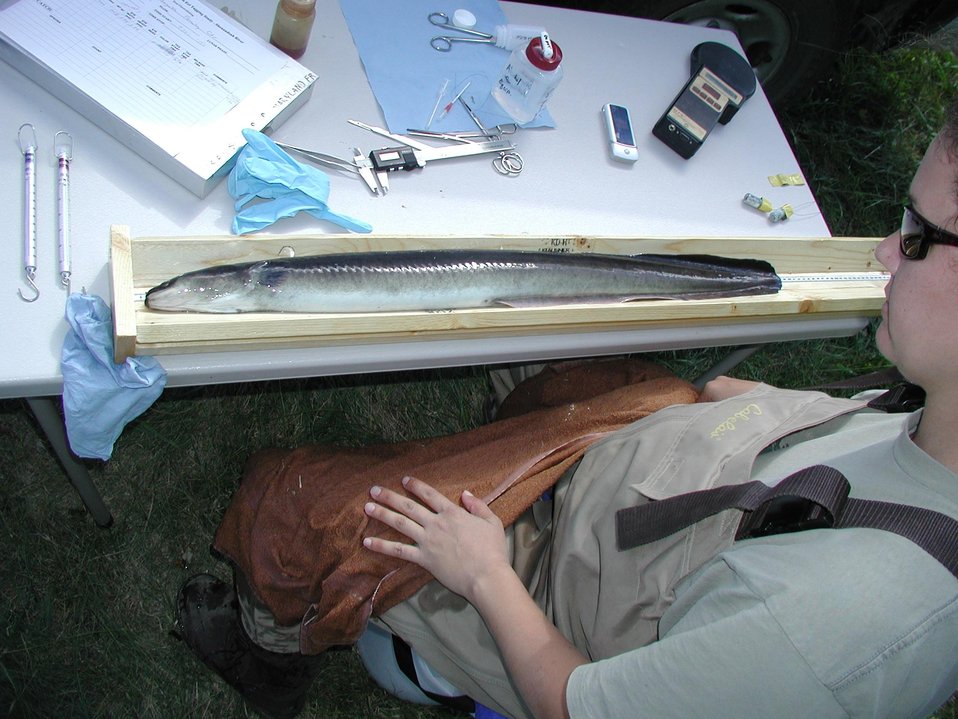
American eel

Silver eels collected in Shenandoah River to be radio tagged for a tracking study. American eels begin sexual differentiation at a length of about 8 to 10 inches and, depending on eel density, become male or female silver eels.